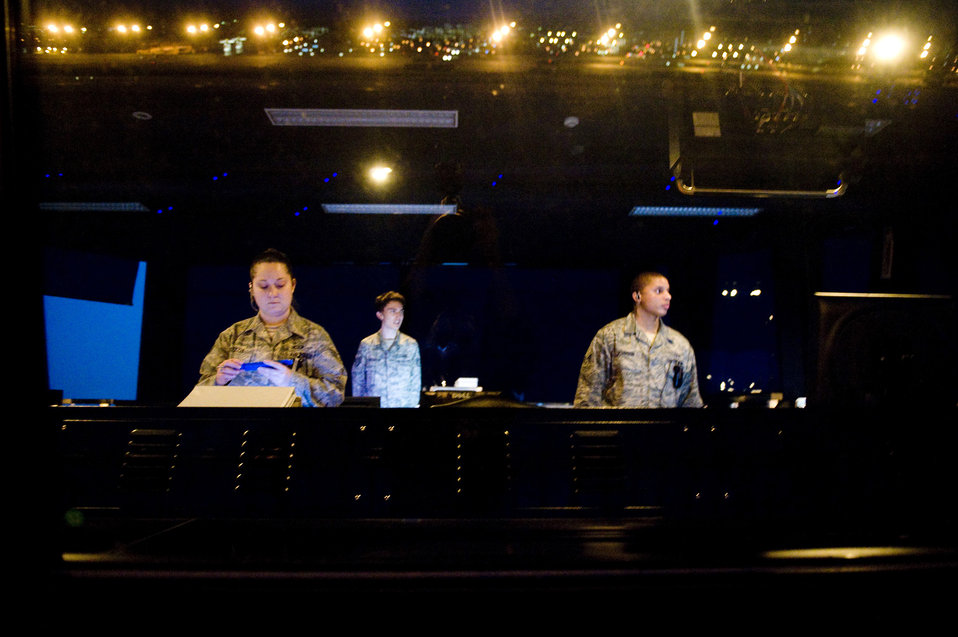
Yokota's ATC manages influx of aircraft for Operation Tomodachi

YOKOTA AIR BASE, Japan -- Senior Airman Lyndsi Tullos, Staff Sgt. Steven Valentine, and Senior Airman Nissean Johnson, 374th Operations Support Squadron air traffic controllers, maintain control of inbound and outbound aircraft here March 24. Yokota's flight line has received over triple the amount of aircraft due to Operation Tomodachi. The military and civilian aircraft have been from multiple nations carrying supplies, personnel and equipment in direct support of bringing relief efforts and trying to minimize human suffering.